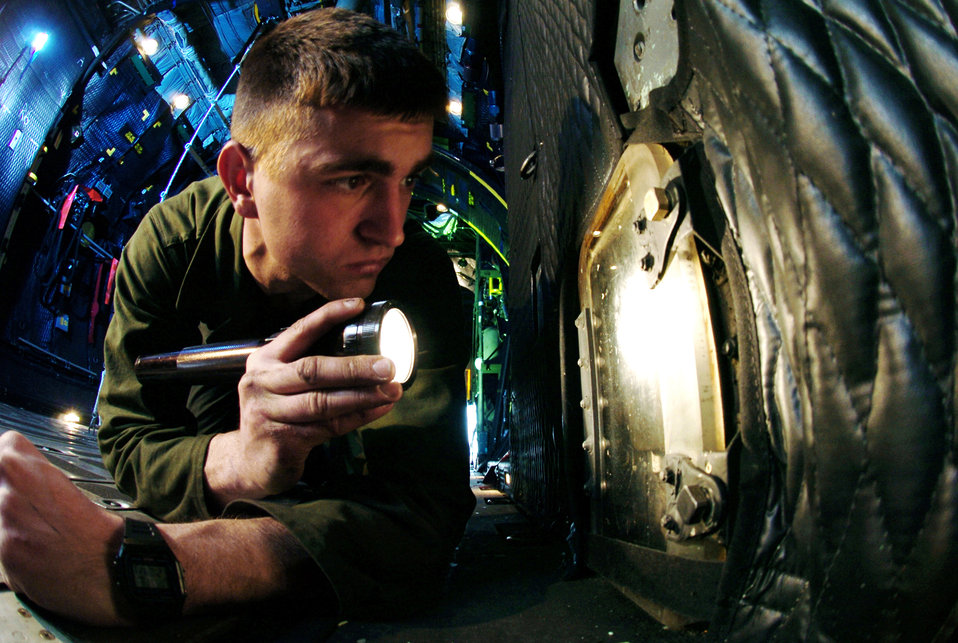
Shining light on the situation

YOKOTA AIR BASE, Japan -- Airman Michael Womack uses a flashlight to check the main landing gear battery assembly of a C-130 Hercules during an annual inspection here. Airman Womack is a C-130 crew chief with the 374th Maintenance Squadron.